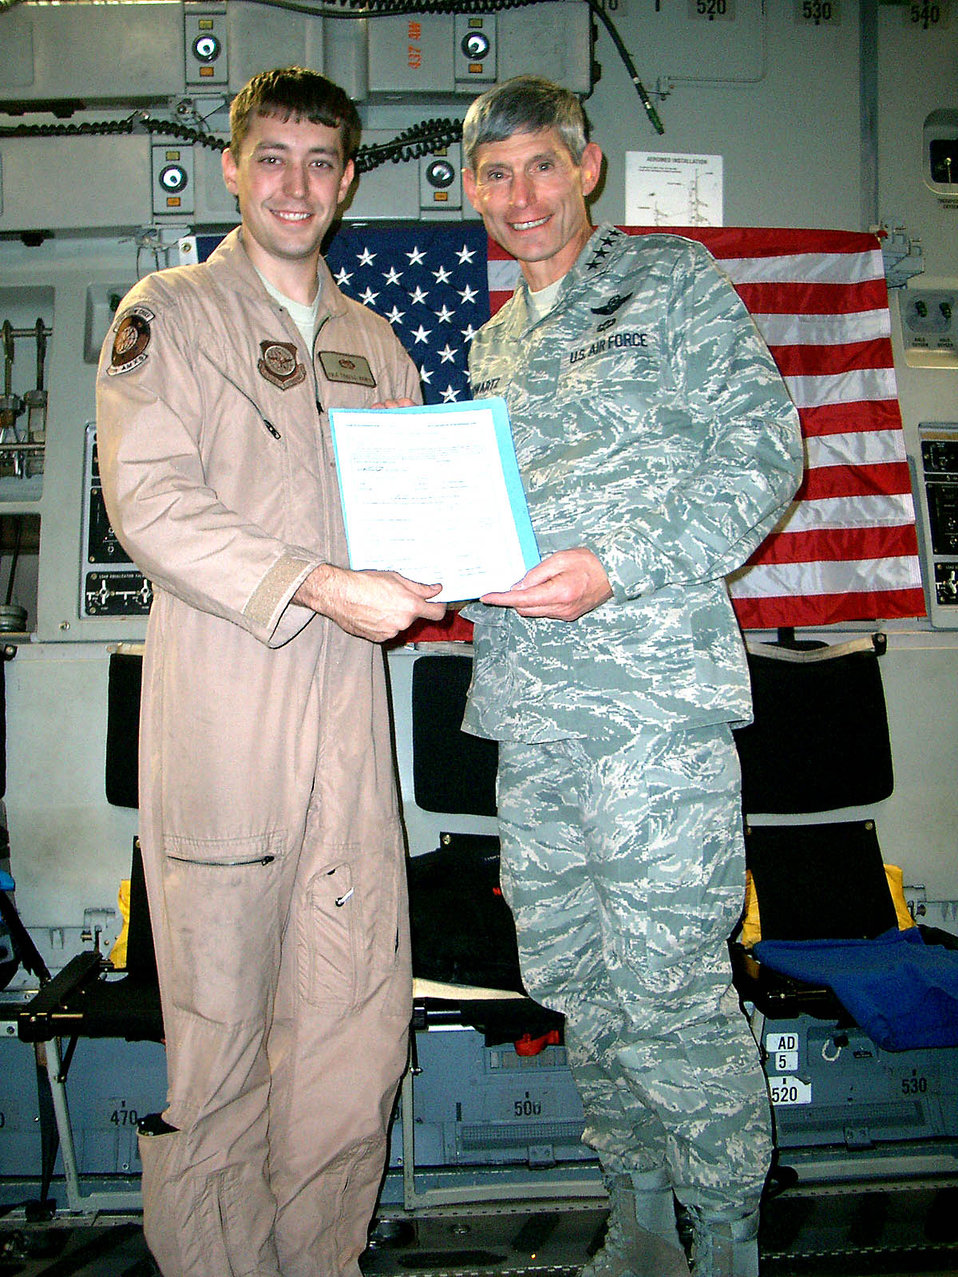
Chief of staff reenlists maintainer over Southwest Asia

Air Force Chief of Staff Gen. Norton A. Schwartz presents Senior Airman Tyrell Haney his reenlistment documentation after reenlisting him Oct. 23 in a ceremony aboard a C-17 Globemaster III cruising above the U.S. Central Command area of operations. Airman Haney, a 437th Aircraft Maintenance Squadron crew chief from Charleston Air Force Base, S.C., already has deployed twice to CENTCOM within his first 3 ? years of enlistment.